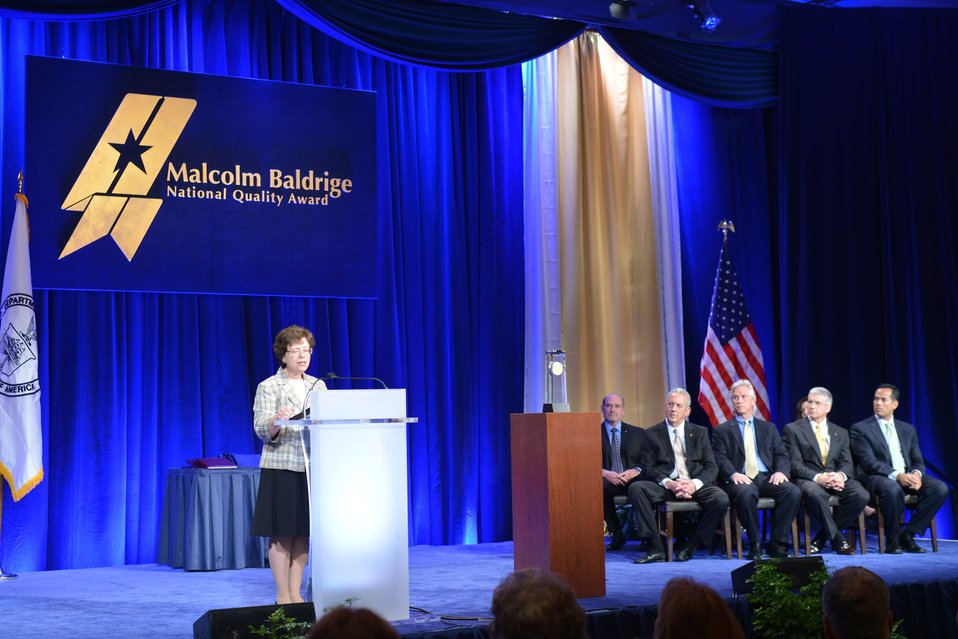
DoC Deputy Secretary Rebecca Blank at the 2012 Baldrige Award Ceremony

U.S. Commerce Deputy Secretary Rebecca Blank speaking at the 2012 Baldrige Award Ceremony; April 8, 2013 at the Baltimore Marriott Waterfront